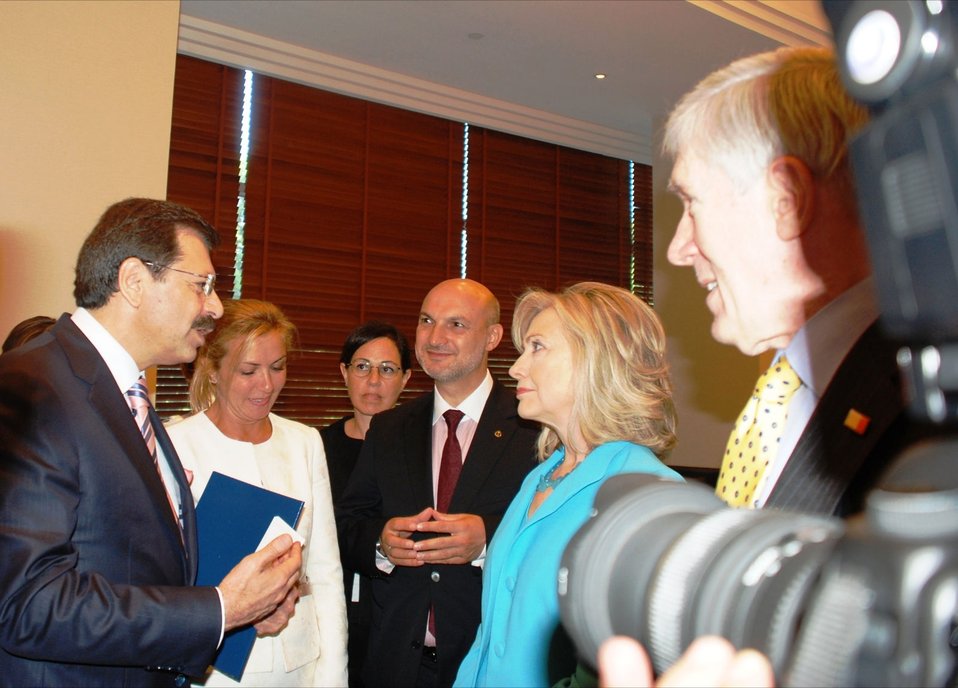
Secretary Clinton Speaks With Partners for a New Beginning (PNB) Initiative Meeting Participants

U.S. Secretary of State Hillary Rodham Clinton meets with participants in the Partners for a New Beginning (PNB) Initiative Meeting, including Rıfat Hisarcıklıoğlu, Chairman of the Union of Chambers and Commodity Exchanges of Turkey (TOBB); Ömer Cihad Vardan, President of the Independent Industrialists' and Businessmen's Association (MUSIAD); Ümit Boyner, President of the Turkish Industrialists' and Businessmen's Association (TUSIAD); Galya Molinas, President of Coca Cola Turkey; in Istanbul, Turkey, on July 16, 2011. Under Secretary of State for for Economic, Energy and Agricultural Affairs Robert Hormats is featured on the Secretary's immediate left.